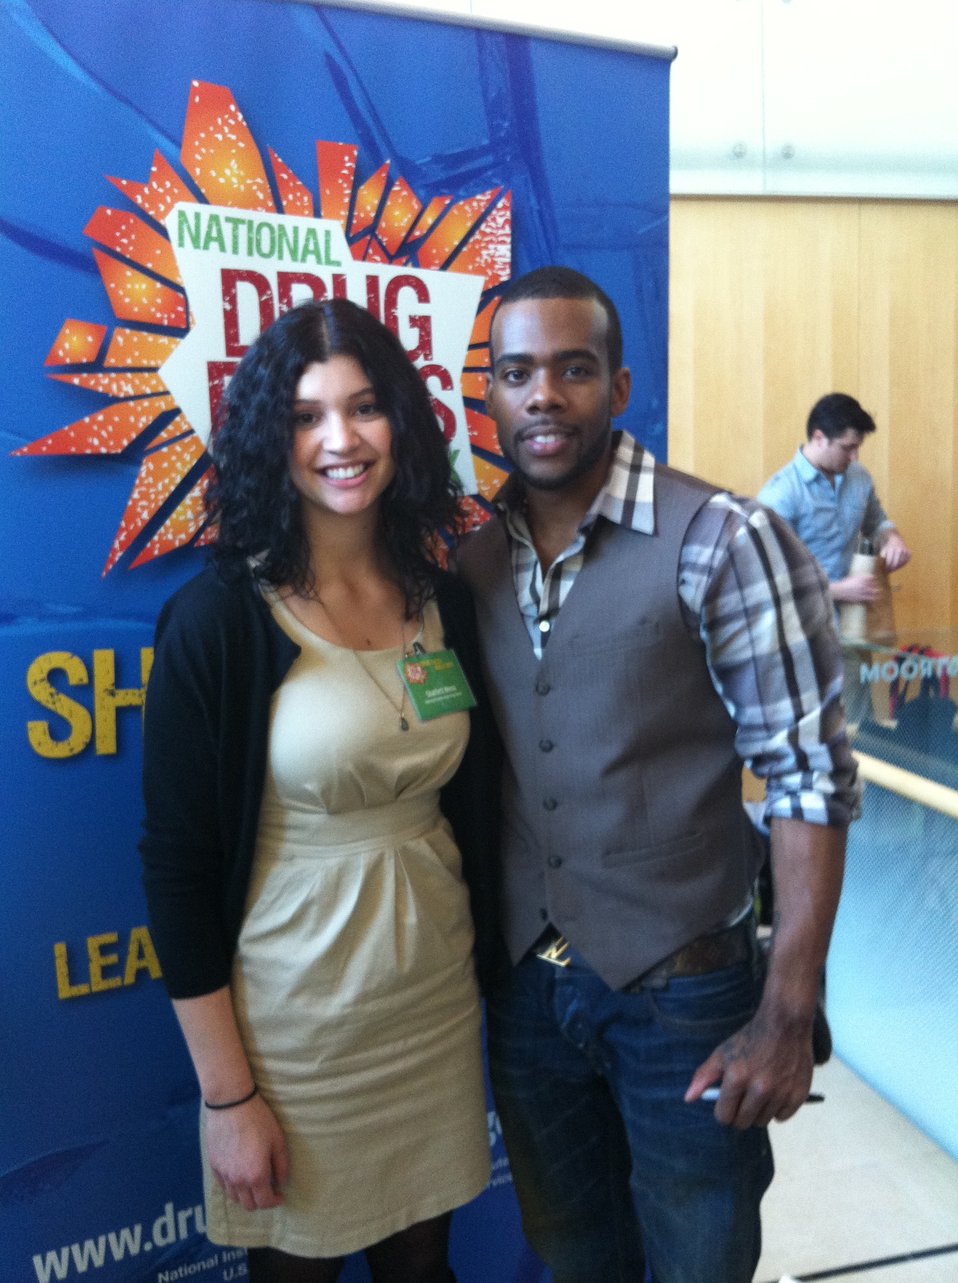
Mentor 24